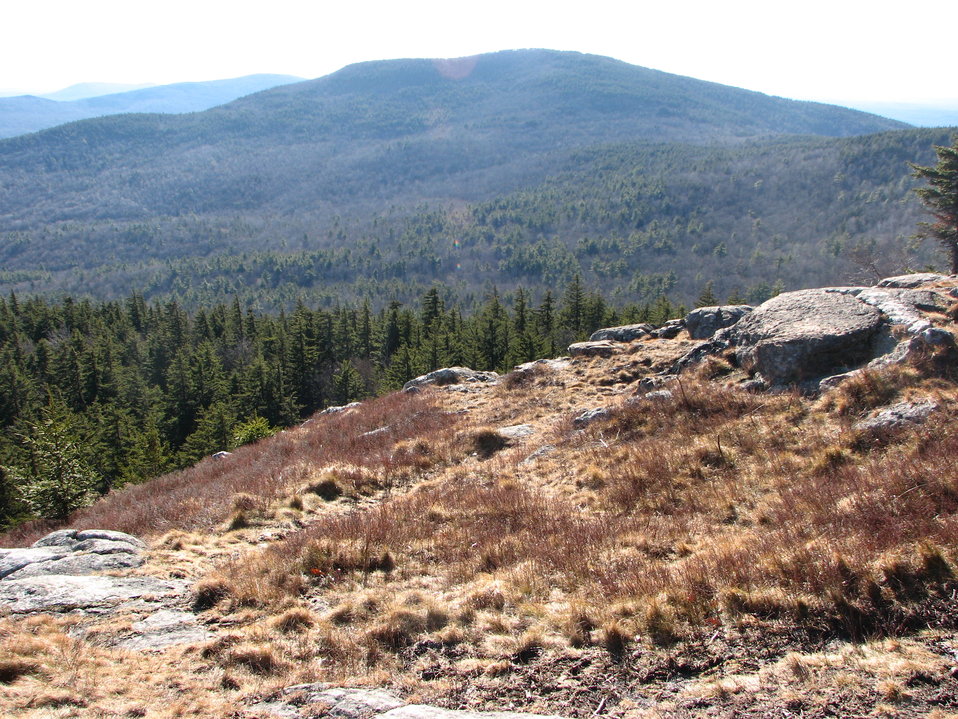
Wapack Trail 4

Wapack National Wildlife Refuge, New Hampshire.